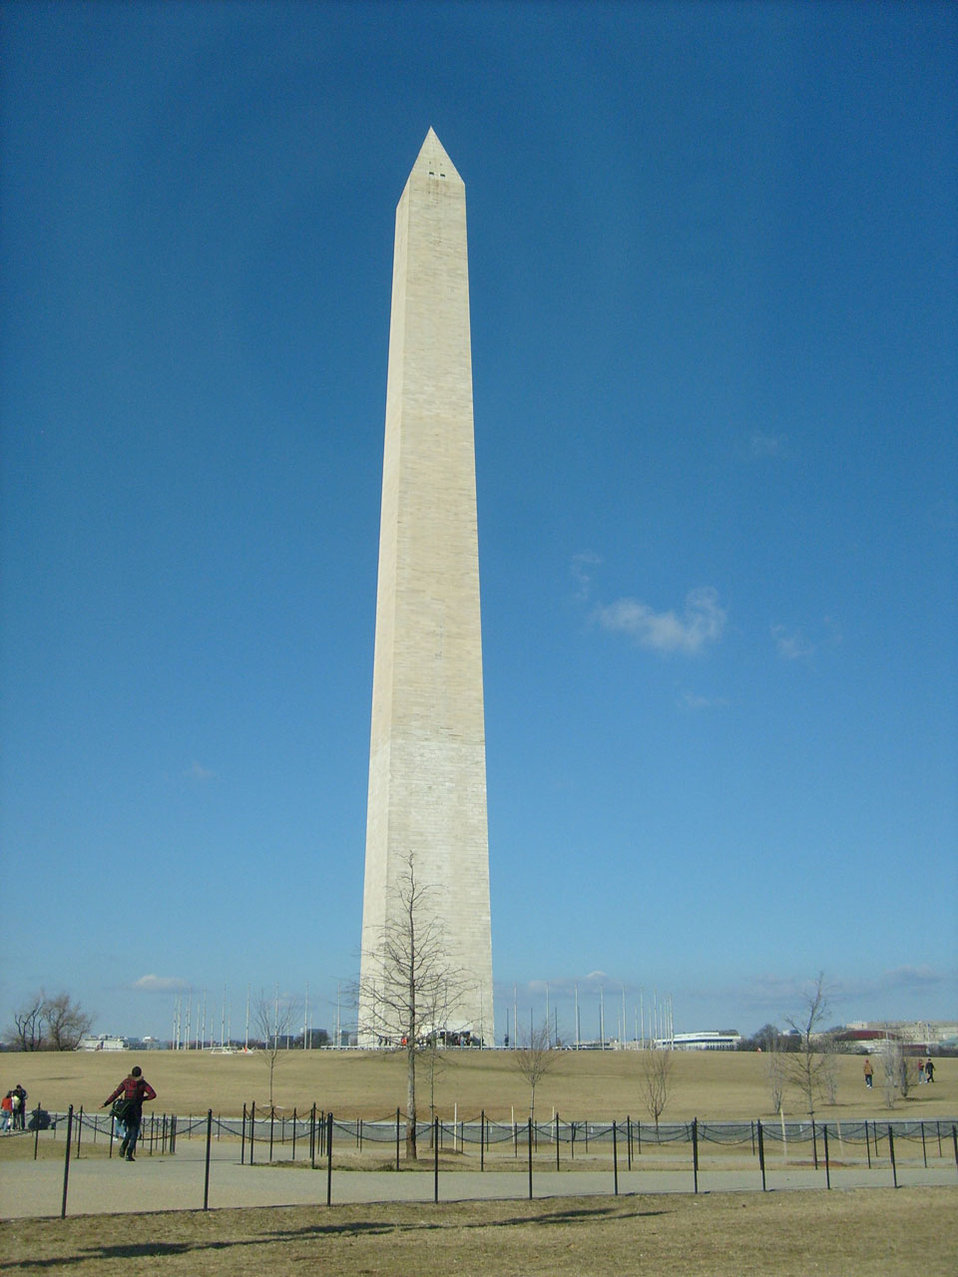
Washington monument.